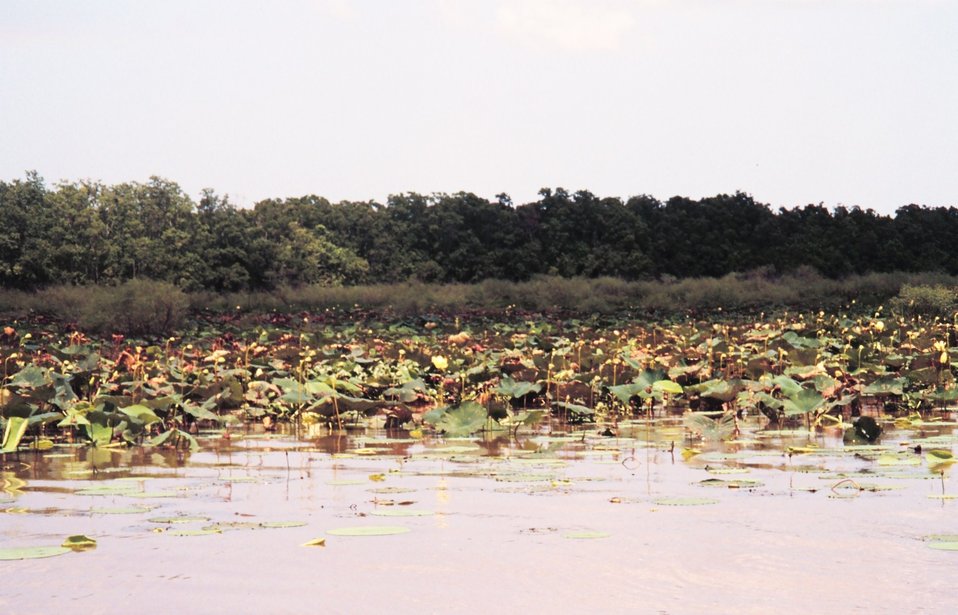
Lotus plants differ from water lilies in the shape of the leaves and the seed pods.